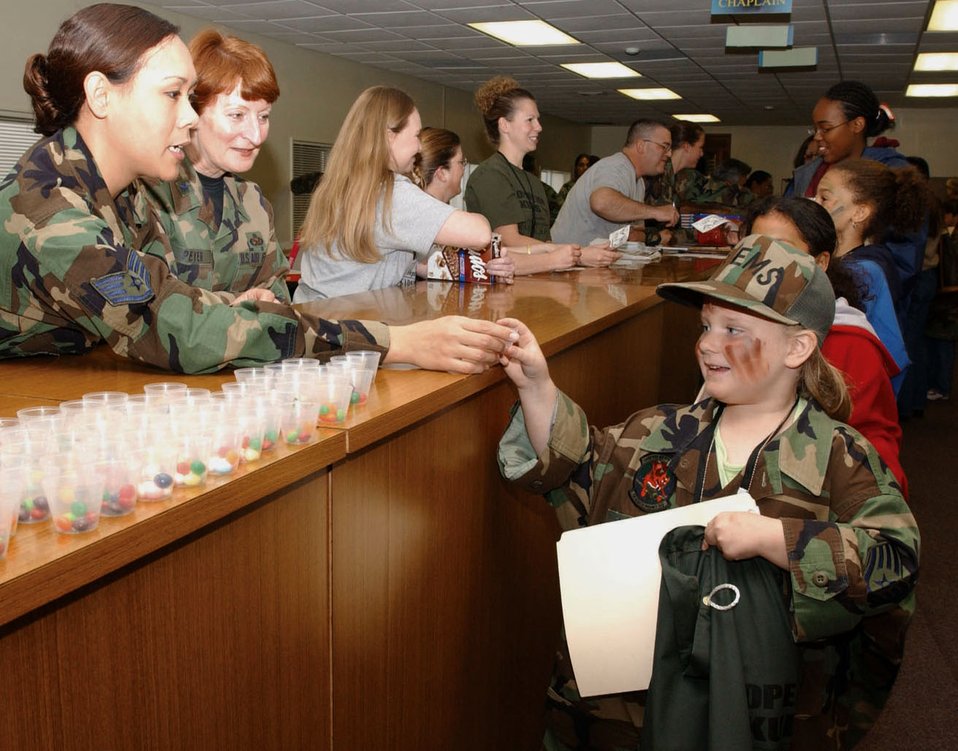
Kadena children get deployment experience

KADENA AIR BASE, Japan -- Victoria Cochran, 6, gets her jellybean